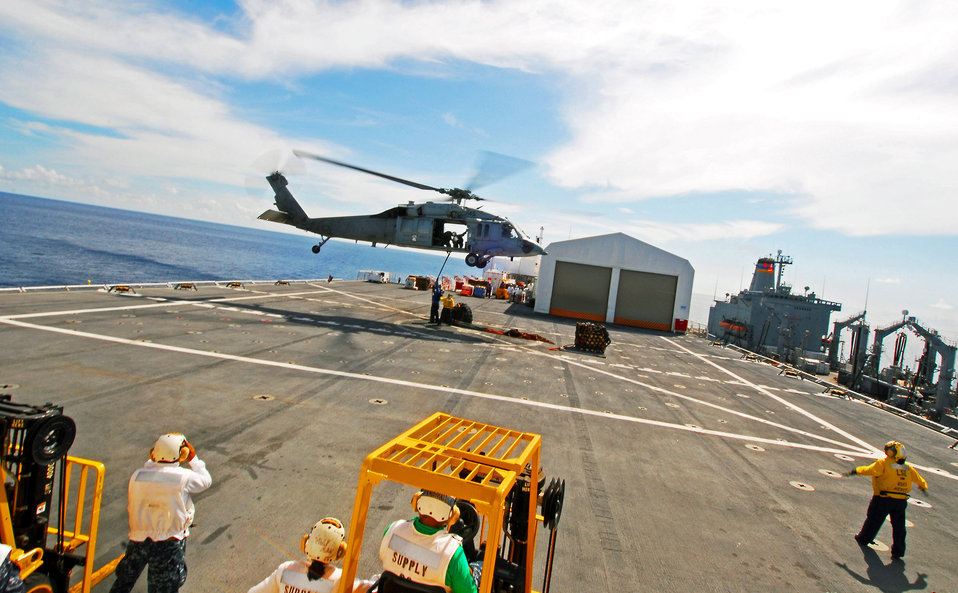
Flight Deck Members Attach Cargo to an MH-60S Knighthawk Helicopter

Flight deck members aboard the Military Sealift Command hospital ship USNS Mercy (T-AH 19) attach cargo to an MH-60S Knighthawk helicopter from Helicopter Sea Combat Squadron 23 “Wild Cards”, during a vertical replenishment (VERTREP) with Fleet Replenishment Oiler USNS Pecos (T-AO 197) in the Banada Sea on July 25, 2010. Mercy is conducting Pacific Partnership 2010, the fifth in a series of annual U.S. Pacific Fleet humanitarian and civic assistance endeavors to strengthen regional partnerships.